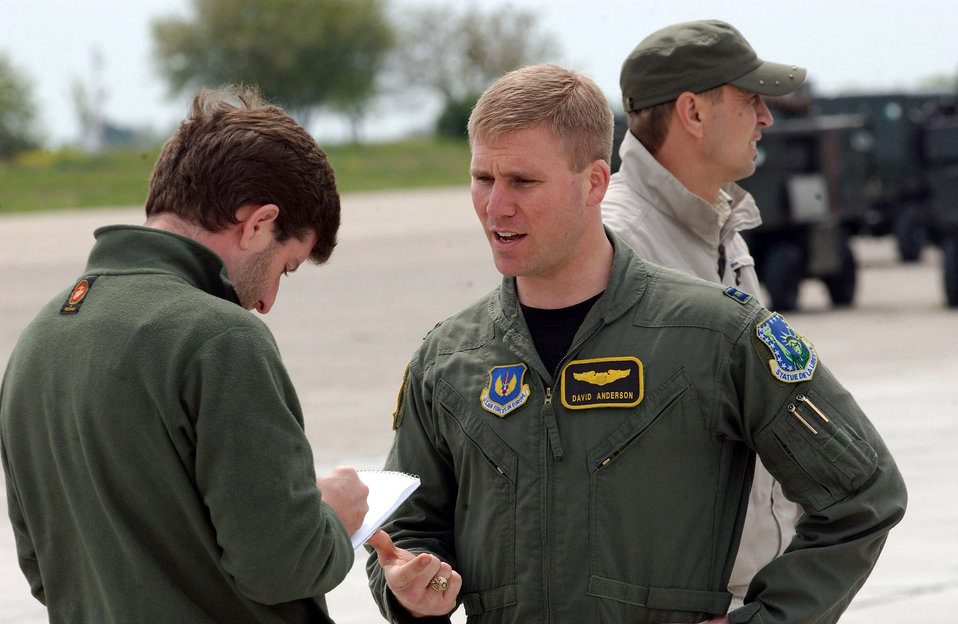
Air Force gains larger presence in Romania

Capt. David Anderson conducts an interview with Stars and Stripes reporter Brian Mitchell during Exercise Sniper Lance 2007 May 1 at Mihail Kogalniceanu Air Base, Romania. The exercise is the first since U.S. and Romanian officials signed a Presence Agreement, which allowed for the presence of U.S. forces at Romanian bases beginning in 2007. Captain Anderson is an F-15 Eagle pilot with the 493rd Fighter Squadron from Royal Air Force Lakenheath, England.